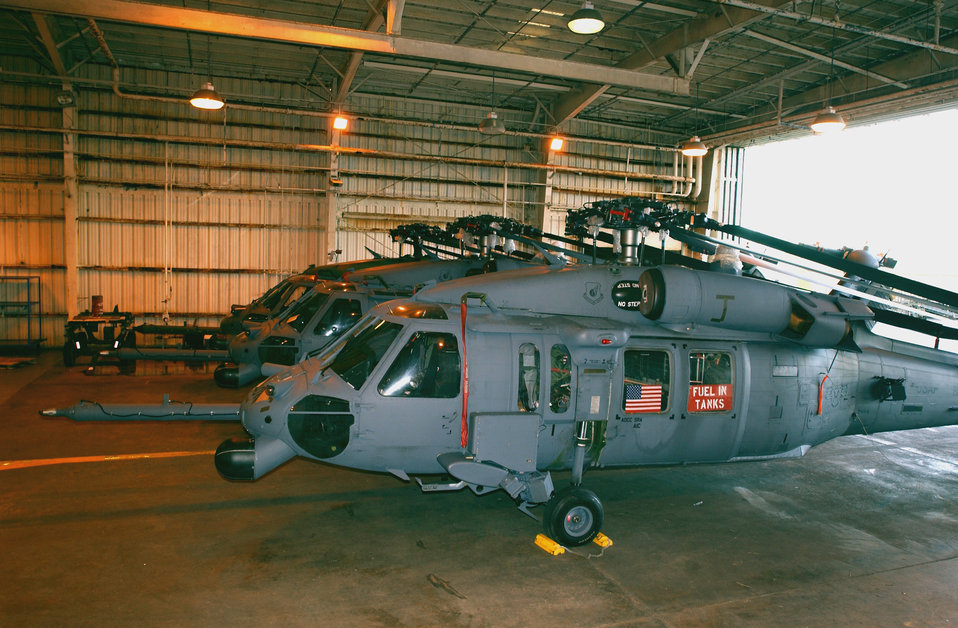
Pave Hawks catch lift to Sri Lanka

KADENA AIR BASE, Japan -- Air Force HH-60G Pave Hawk helicopters are